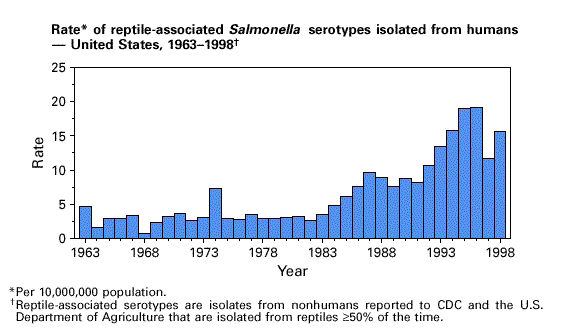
Bar graph showing rate of reptile-associated Salmonella serotypes isolated from humans.